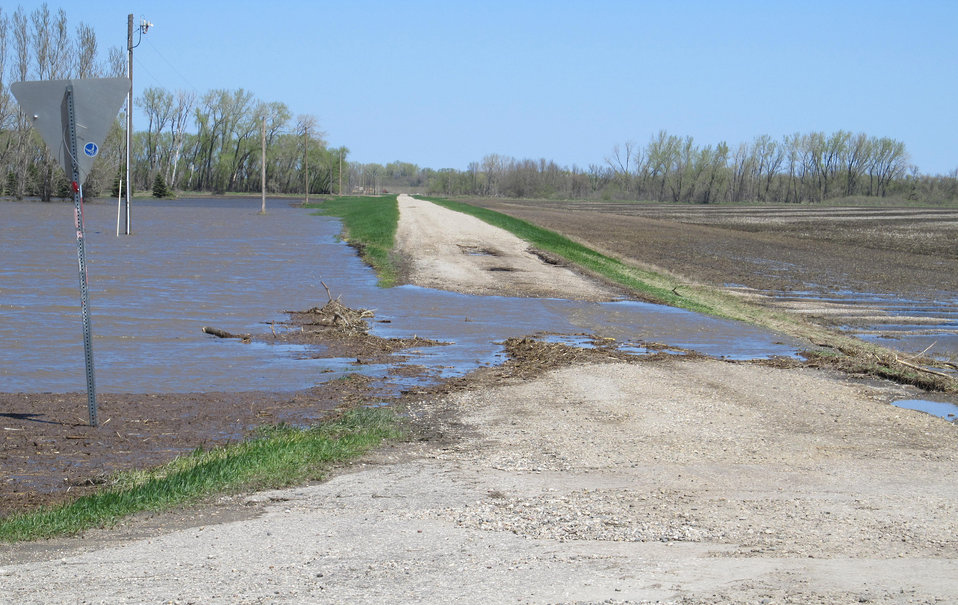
Flooding and water damage in the Park and Tongue River Watersheds located in Cavalier, Pembina and Cavalaier Counties in ND on Thursday, May 23, 2013.